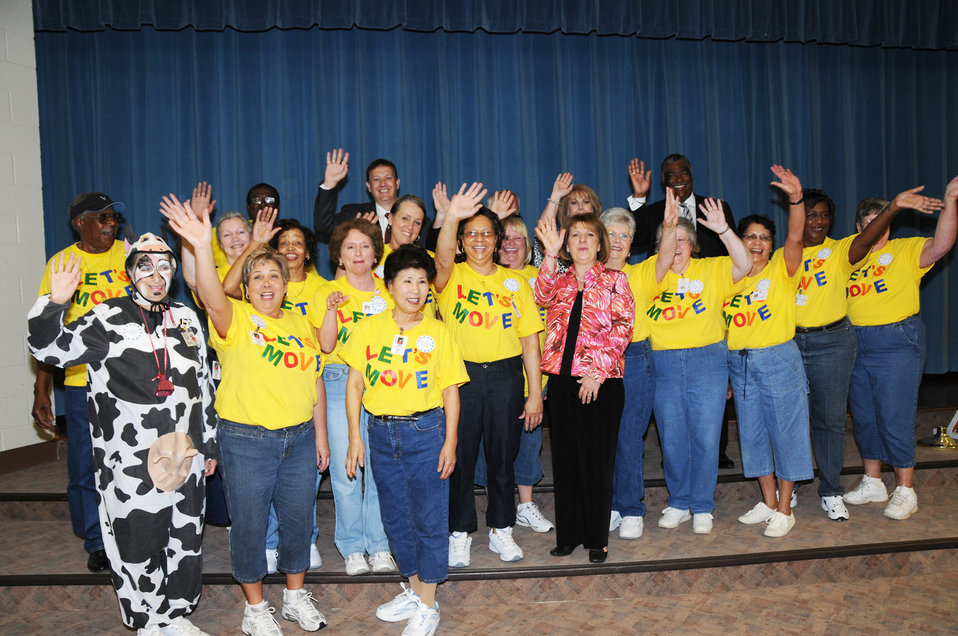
Lets Move - DSC 2244a

Thomasville Primary School’s Let’s Move and Nutrition Staff and other local, state and national VIPs were on hand to celebrate the school receiving a USDA HealthierUS School Challenge Gold Award in Thomasville, NC